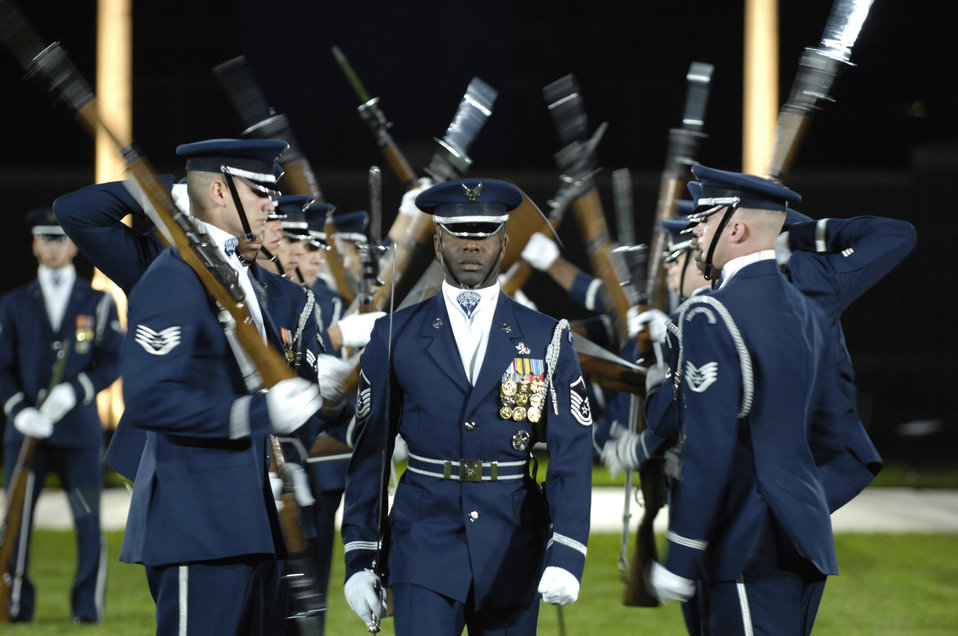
Practicing for precision

Members of the U.S. Air Force Drill team perform during a rehearsal tattoo Oct. 5 on Bolling Air Force Base, D.C. The tattoo will be in honor of the 2008 NATO Air Chiefs' Conference hosted by Air Force Chief of Staff Gen. Norton A. Schwartz.